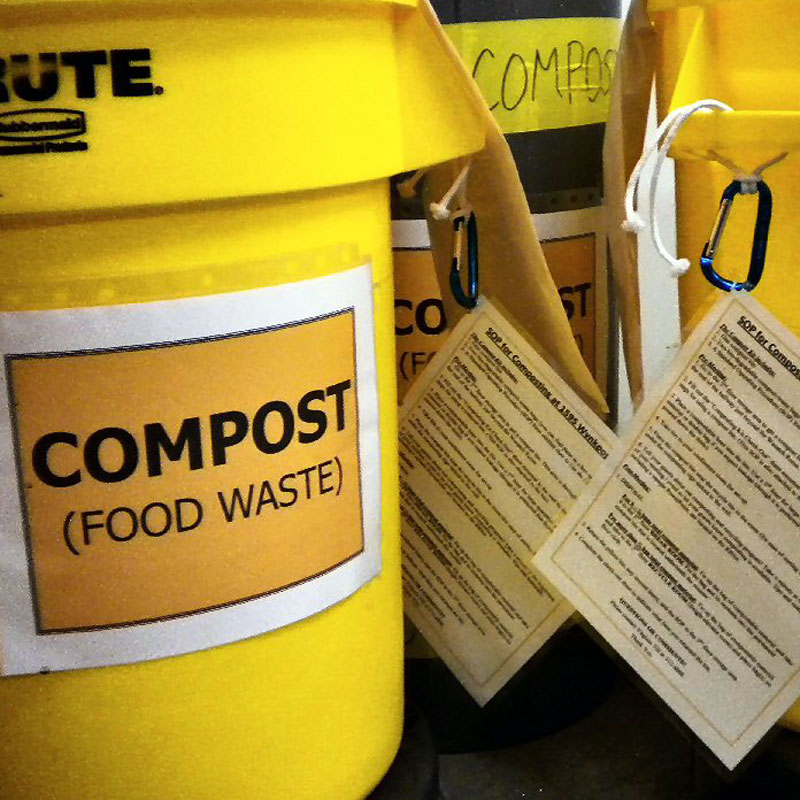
EPA Region 8 Compost Bin

At EPA, #WeRecycle. Learn how you can too: www2.epa.gov/recycle